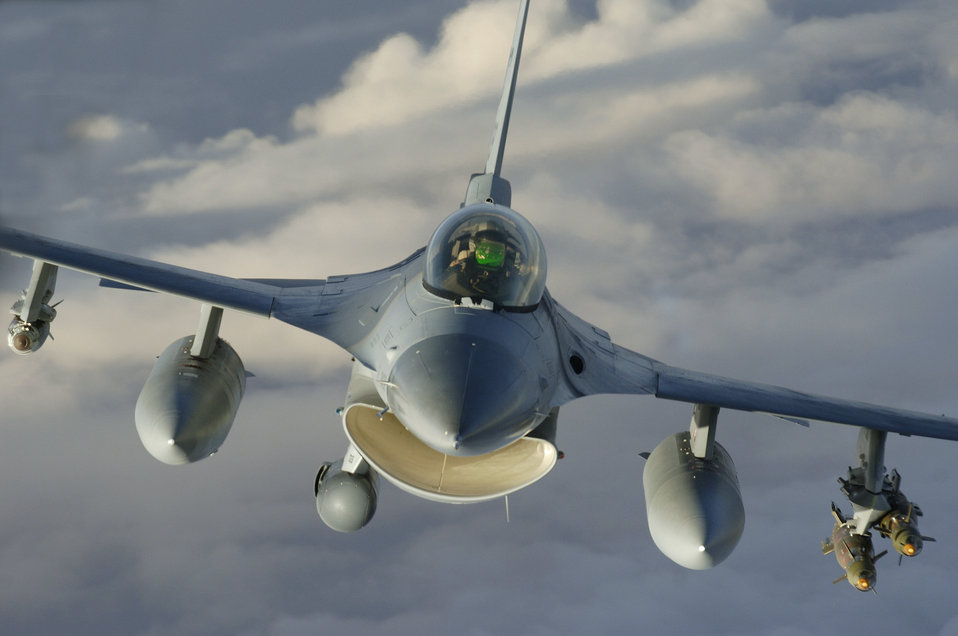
Boom uses steady hand to keep aircraft fighting

After taking on gas from a KC-135 Stratotanker four miles above Iraq, an F-16 Fighting Falcon deployed from Canon Air Force Base, N.M., pulls away to resume its close-air support mission for coalition forces on the ground.